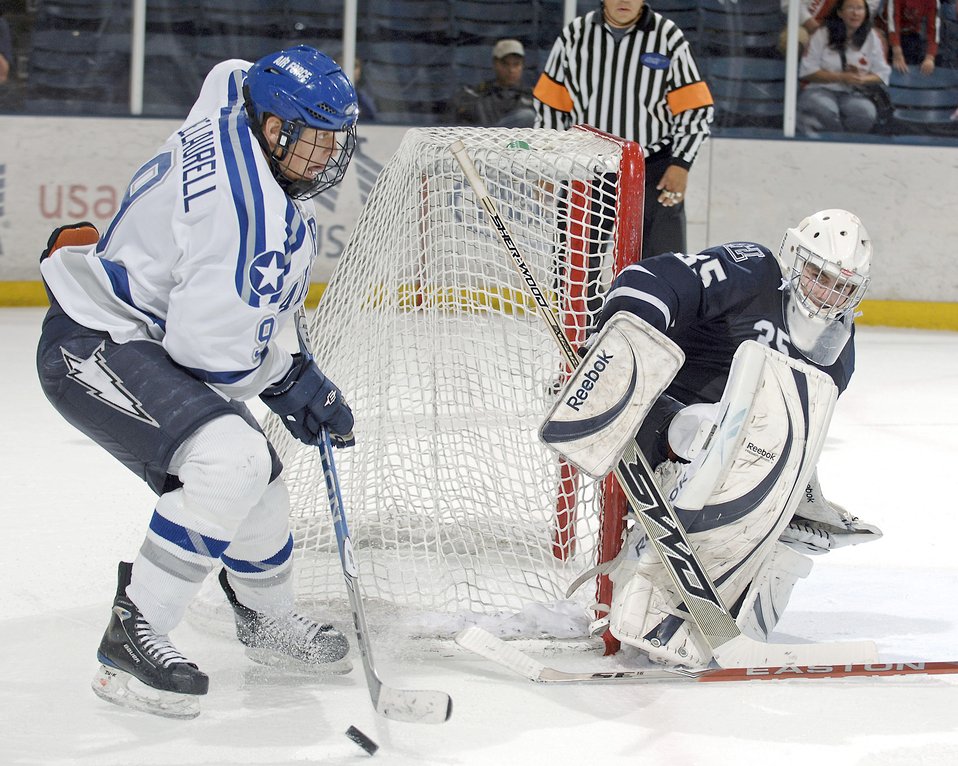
Falcons defeat the Pronghorns

Falcon sophomore Kyle De Laurell passes the puck from behind the net during a hockey exhibition game against the University of Lethbridge Oct. 4, 2010, at the U.S. Air Force Academy's Cadet Ice Arena in Colorado Springs, Colo. Air Force defeated the Pronghorns 4-3 in overtime.